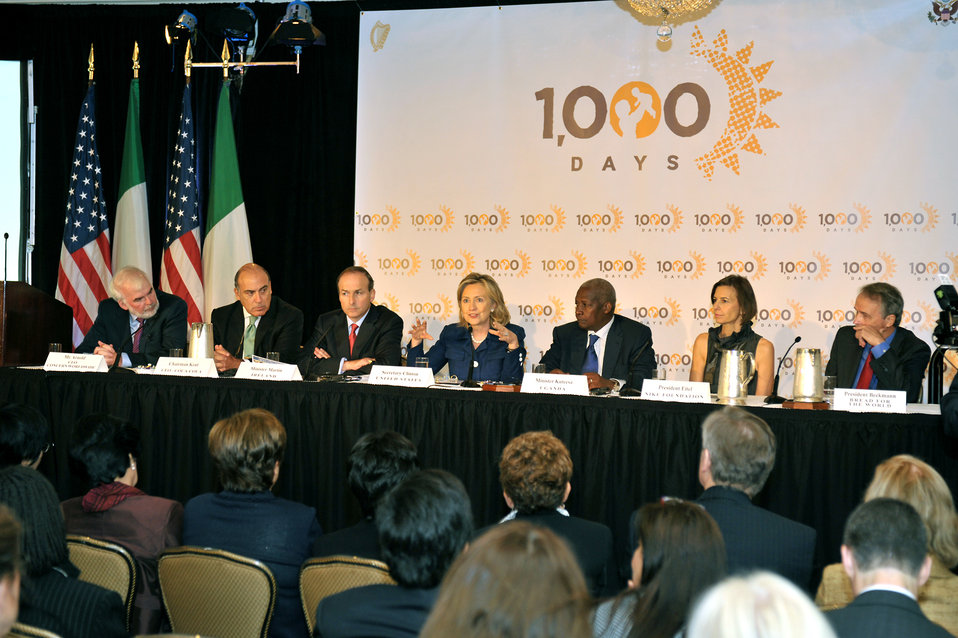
Secretary Clinton Participates in the '1,000 Days: Change a Life, Change the Future' Event

U.S. Secretary of State Hillary Rodham Clinton participates in the event on reducing child undernutrition, '1,000 Days: Change a Life: Change the Future,' which she co-hosted with Irish Foreign Minister Micheal Martin at the InterContiental Hotel in New York, New York, on September 21, 2010.